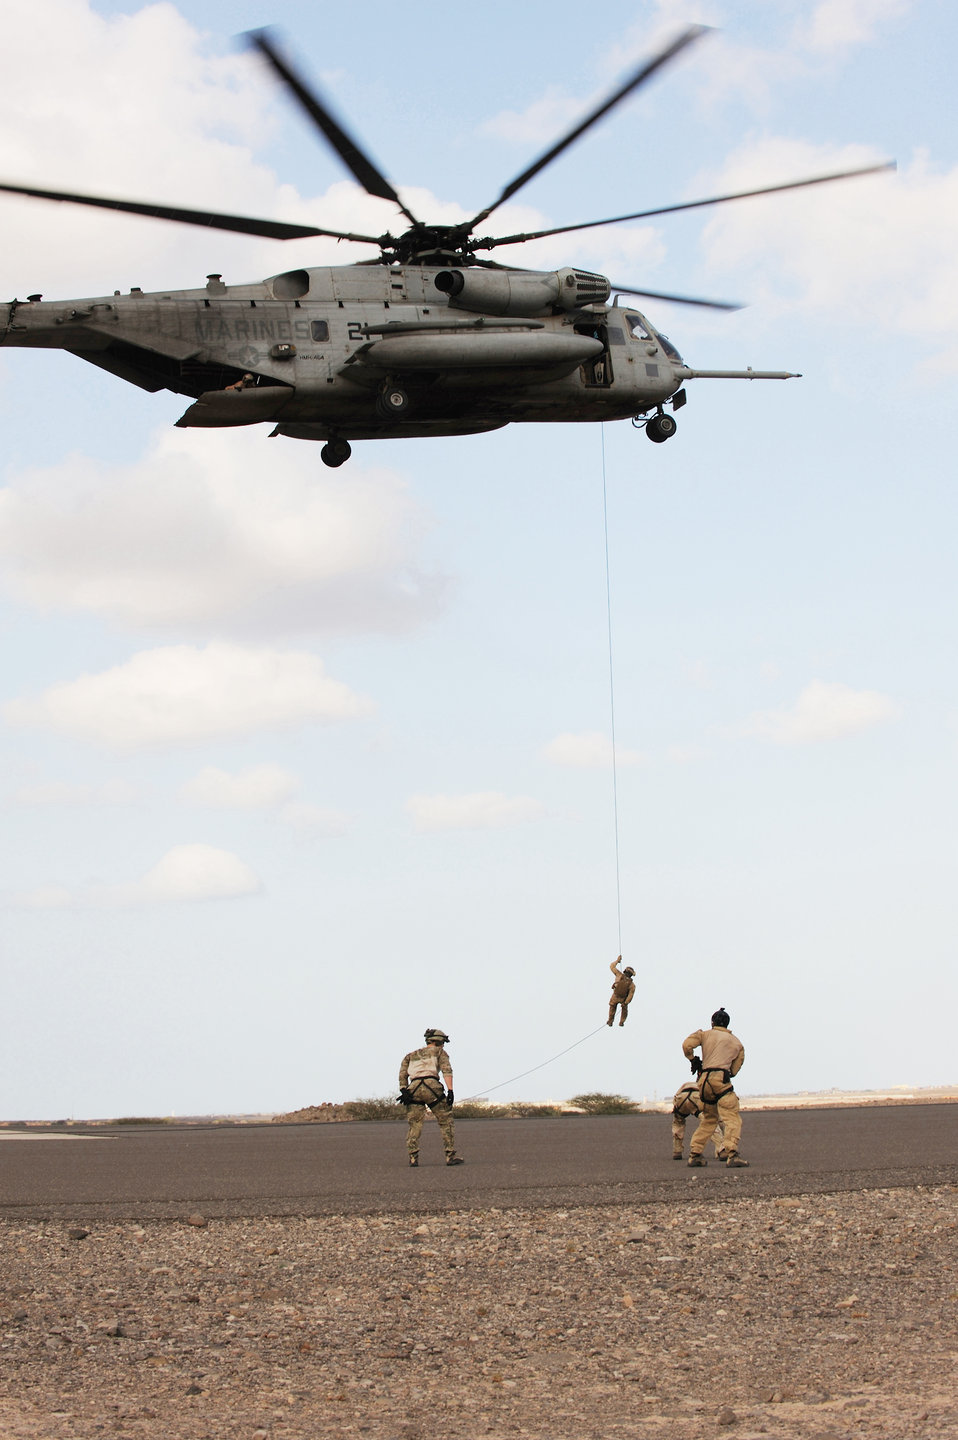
Pararescuemen hone skills in Africa

Air Force pararescuemen conduct a combat insertion and extraction exercise from a Marine CH-53 Sea Stallion helicopter in Djibouti, Africa, Jan. 5, 2010. The helicopter is attached to Heavy Marine Helicopter Squadron 464, and the two units are deployed to Combined Joint Task Force-Horn of Africa.